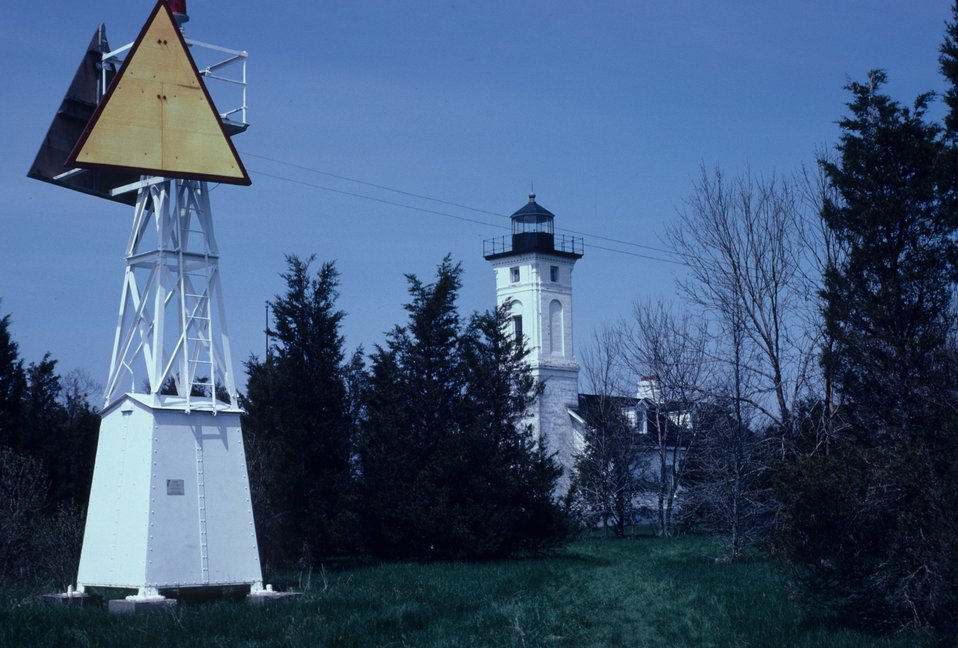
Stony Point Lighthouse along the St. Lawrence River